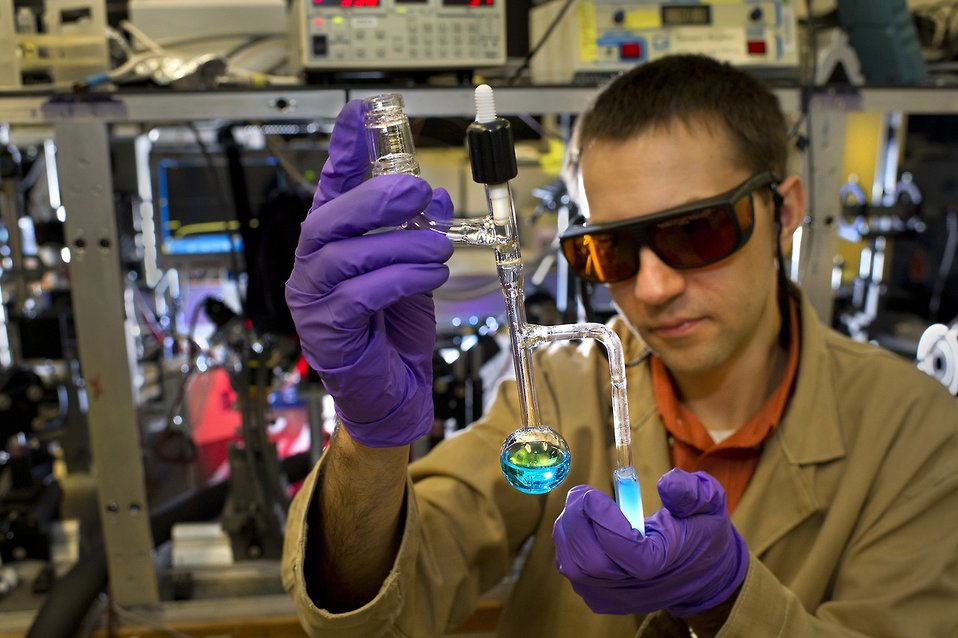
Photo of the Week: Converting Solar Energy into Fuel

In this photo, Brookhaven scientist Dmitry Polyansky examines a vial containing a specialized catalyst designed to help convert solar energy into fuel. Producing clean-burning hydrogen fuel from just sunlight and water requires custom-built catalysts for water oxidation -- the part of the water-splitting process that generates oxygen atoms. A tiny amount of the solid catalyst, developed in collaboration with the University of Houston, dissolves and turns the water that lovely shade of blue.